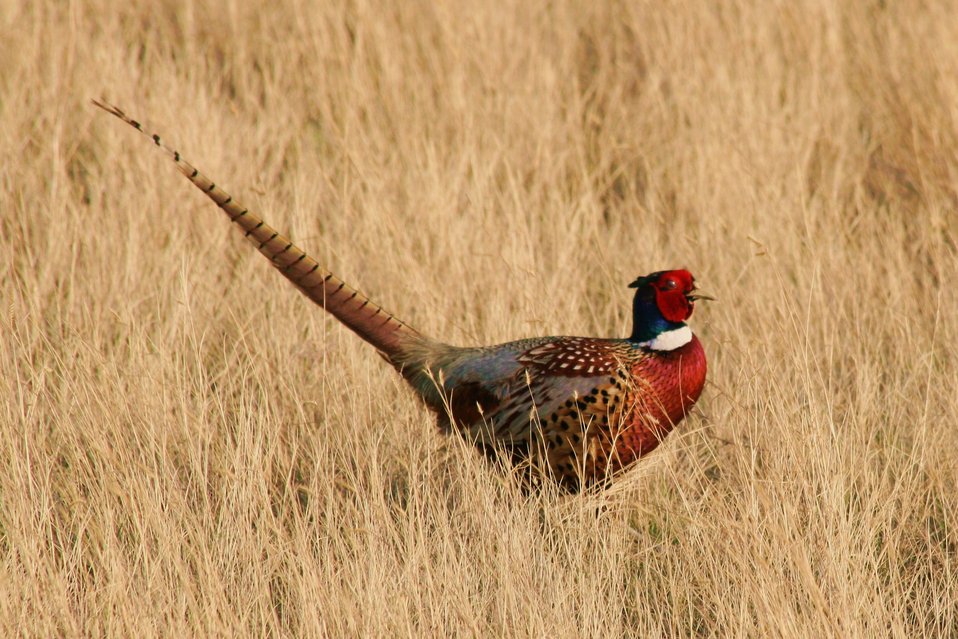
Ring-necked Pheasant

The lands of the refuge were established to protect and provide habitat for migratory birds that cross State lines and international borders and are by law a Federal trust responsibility.

The refuge is of great value to waterfowl and shorebirds, as well as other migrating water-dependent bird species, because of the diversity of wetland and upland habitats that provide for the diverse life cycle needs of these species.